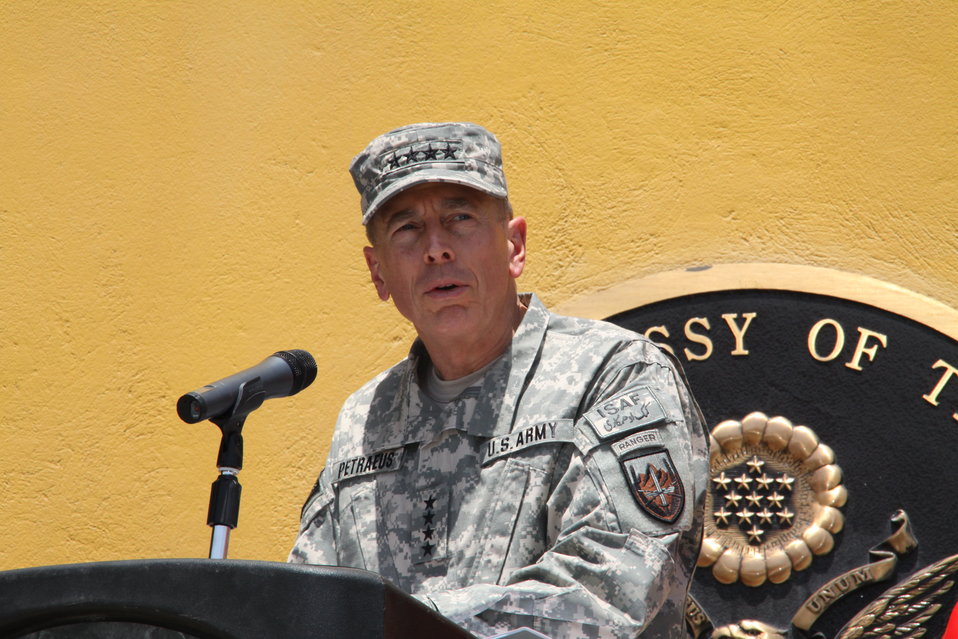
Kabul Official July 4th Celebration